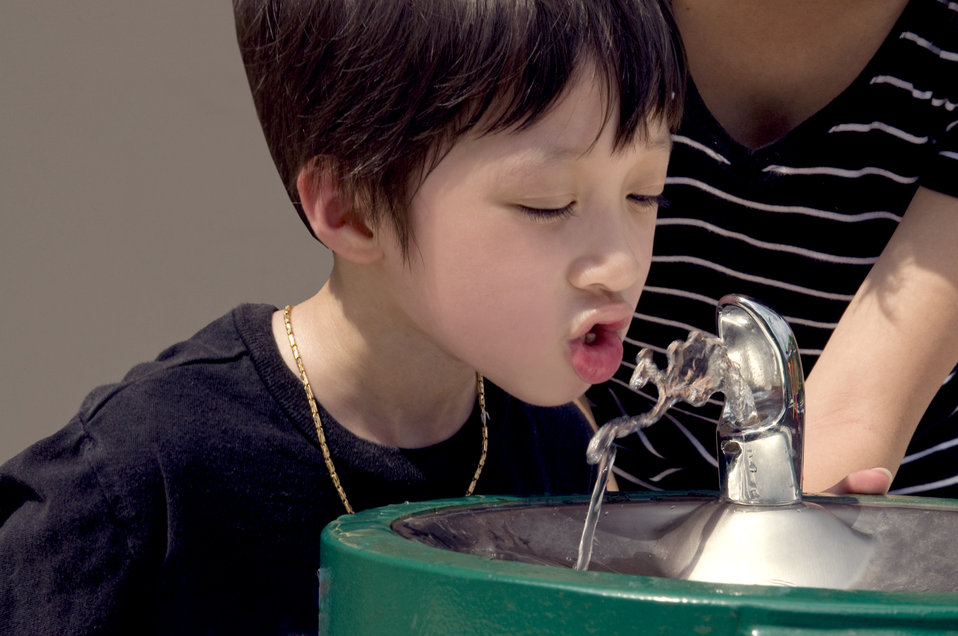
With his mother at his side, this young boy had taken a short break during a day of play at a local playground to take a drink of cool water from the park's water fountain. Note that he was wearing a darkly-colored t-shirt, and denim shorts, which help protect his skin from the sun's harmful rays. He was also wearing a coating of sunscreen on his sun-exposed skin.